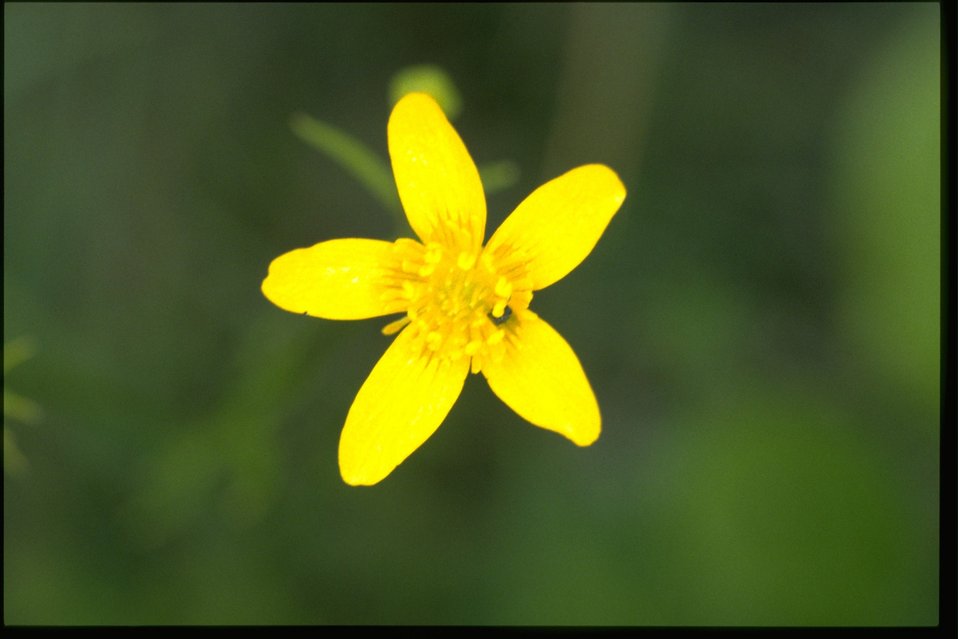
Closeup of Ranunculus occidentalis.